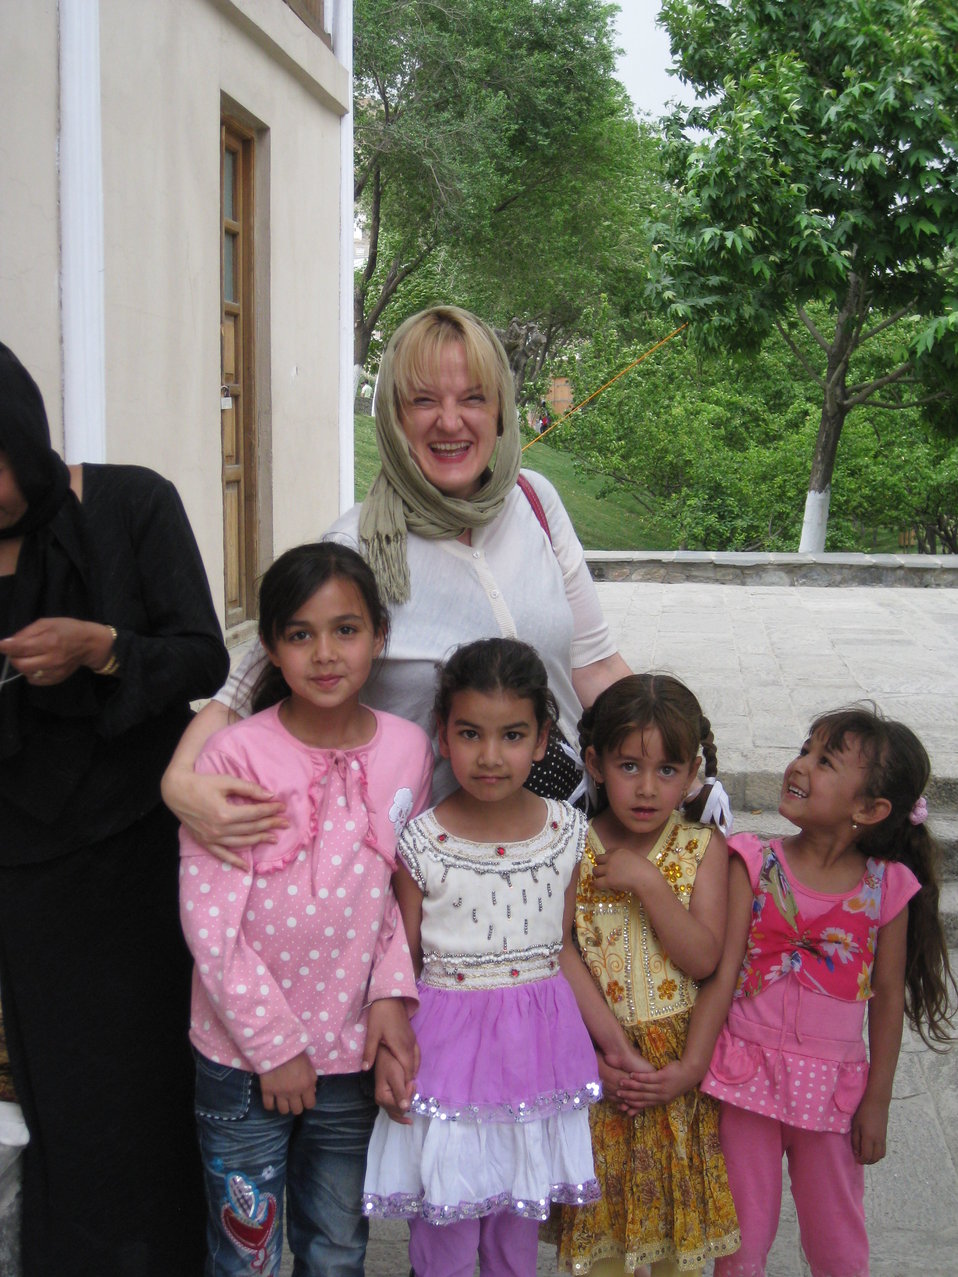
Afghan Youth Voices 102